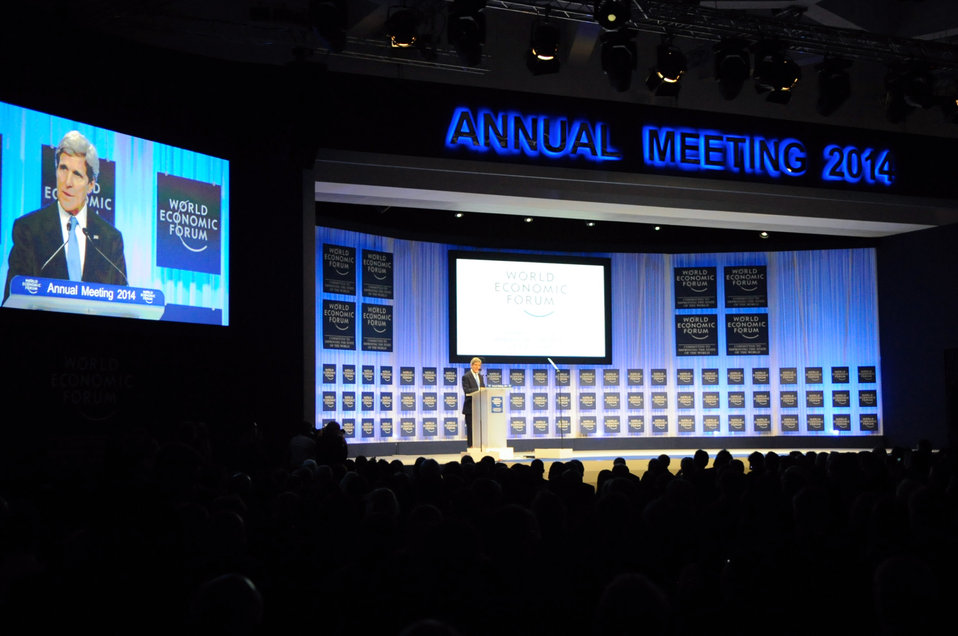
Secretary Kerry Delivers Keynote Address at 2014 World Economic Forum

U.S. Secretary of State John Kerry speaks to a full house as he delivers the keynote address at the 2014 World Economic Forum in Davos, Switzerland, on January 24, 2014.